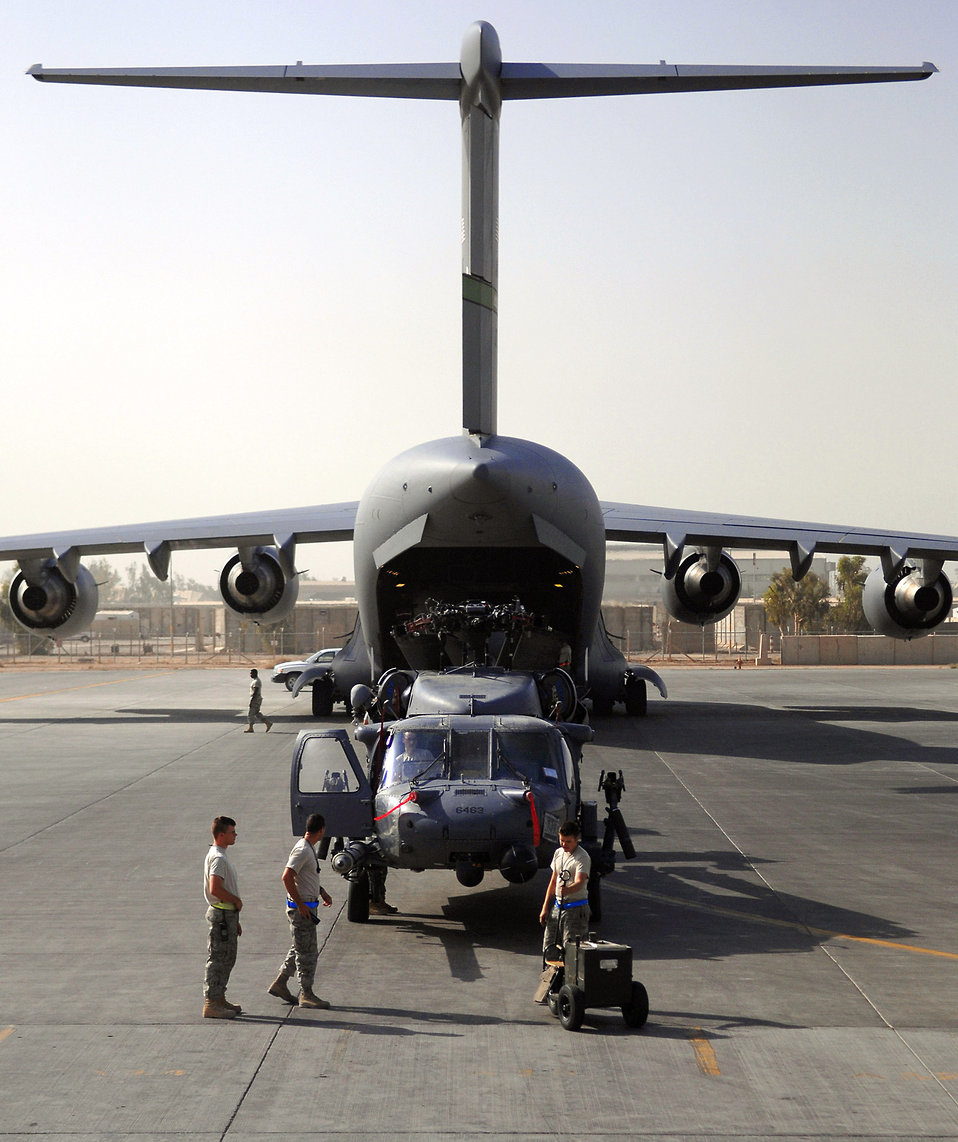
How to put a square peg in a round hole

Airmen assigned to the 64th Expeditionary Helicopter Maintenance Unit prepare an HH-60 Pave Hawk for loading onto a C-17 Globemaster III July 12 at Joint Base Balad, Iraq. The helicopter is in a folded configuration in order to fit into the hull of the aircraft. The Airmen are deployed from Davis-Monthan Air Force Base, Ariz.